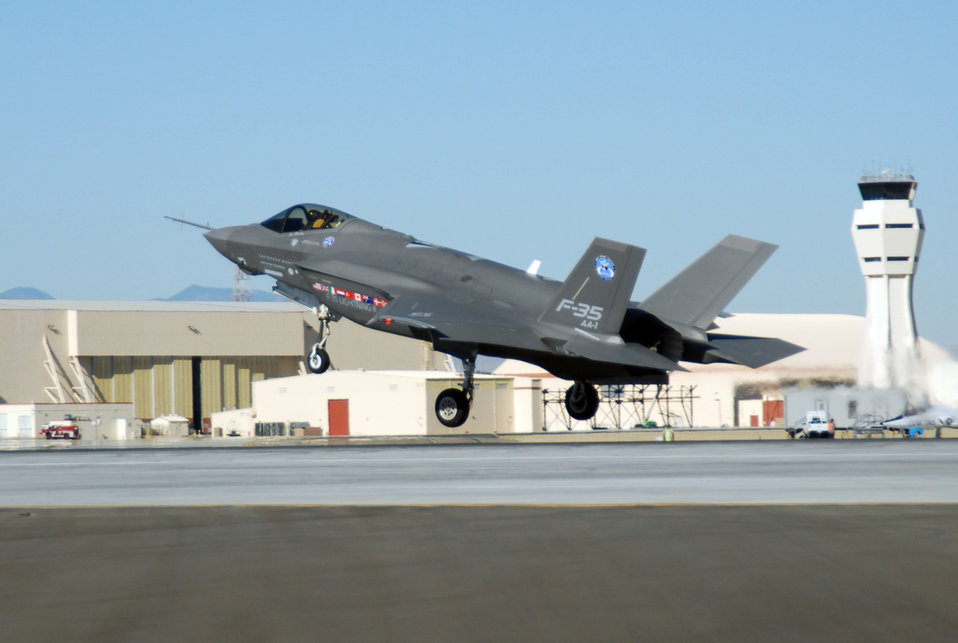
F-35 completes air-start test at Edwards

An F-35 Joint Strike Fighter, marked AA-1, lands Oct. 23 at Edwards Air Force Base, Calif. The F-35 Integrated Test Force staff concluded an air-start test.